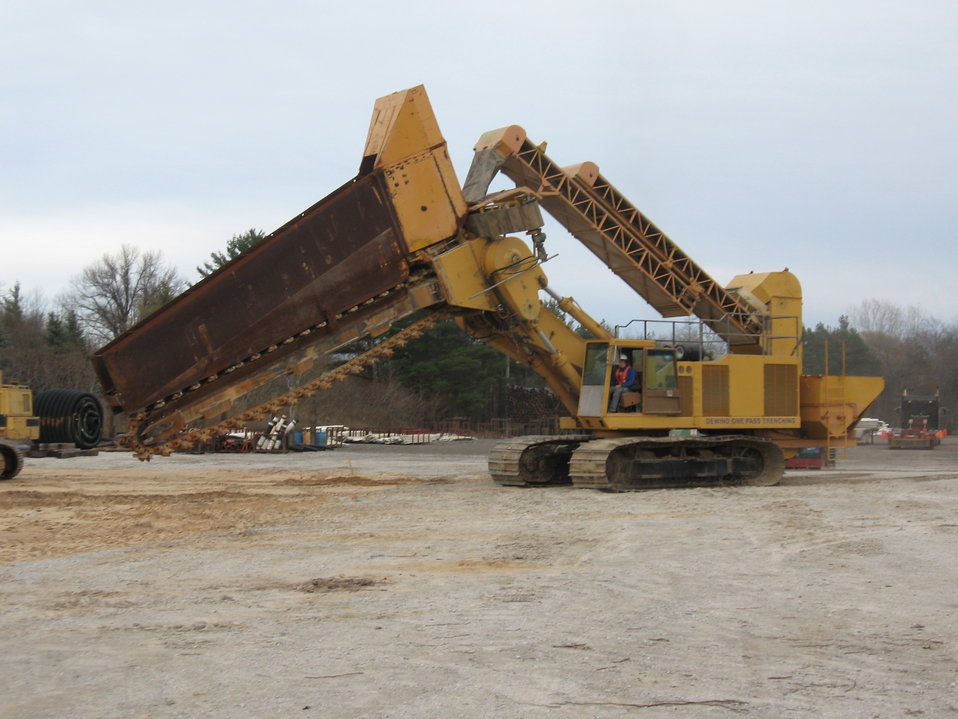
Recovery Act Funds Construction of Trench to Mitigate Groundwater Contamination